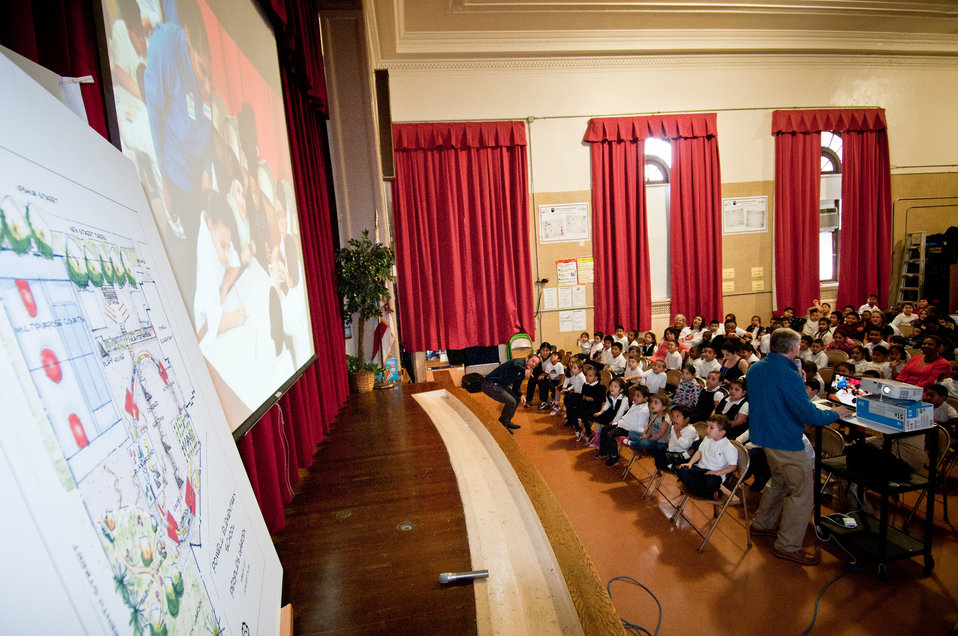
The People’s Garden team architect Bob Sneickus (standing) presents photos of the work it took to develop the School Garden Design Concept for the parents and students of W. B. Powell Elementary School, Washington D.C., on Thursday, March 10, 2011. This People’s Garden team consists of the Washington Capitols, U.S. Department of Agriculture and D.C. Public Schools in Washington, D.C. Their presentation will support the 289 parents and students. The design draft was created by Forest Service landscape architect Matt Arnn, with the support of Natural Resources Conservation Service landscape architect Bob Sneickus, Outreach and Education Coordinator Annie Ceccarini and Project Manager Leslie Burks who worked with the Principal Janeece Docal and the school during an earlier visit to develop illustrated ideas from parents and students. Representing the Washington Capitols is Defenseman, Number: 52 Mike Green, Comcast SportsNet Analyst Alan May and Director of Community Relations Elizabeth Wodatch.